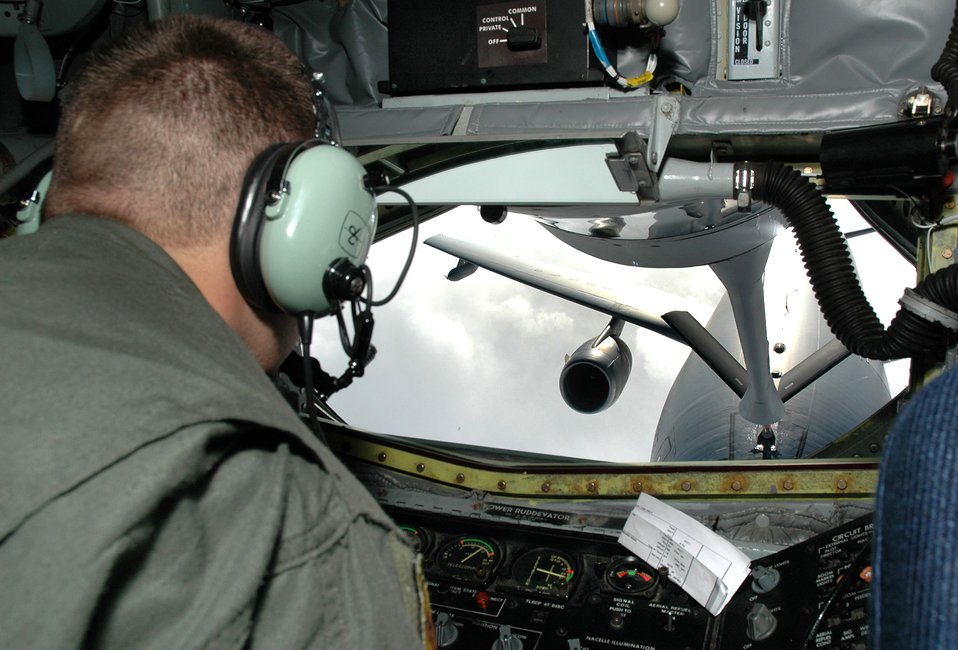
Toping up the Extender

Airman 1st Class Lance M. Welch, boom operator with the Air Force Reserve 940th Air Refueling Wing, practices air refueling with a KC-10 Extender from the 60th Air Mobility Wing at Travis Air Force Base, Calif. during a training mission Jan. 3, 2007. Training missions ensure citizen warriors of the 940th ARW are ready to answer America?s call at any time.